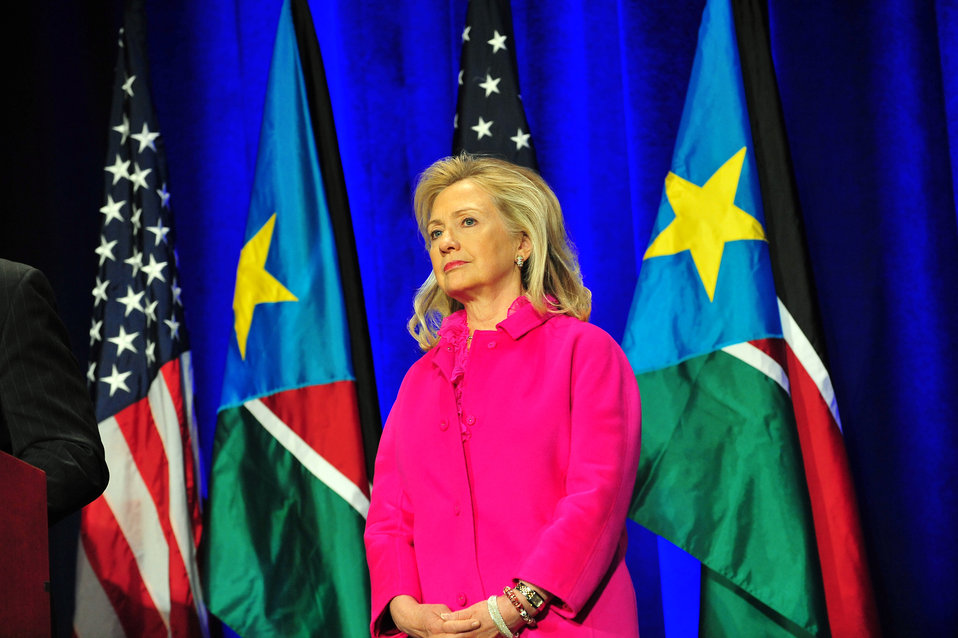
Secretary Clinton Delivers Remarks at International Engagement Conference for South Sudan

U.S. Secretary of State Hillary Rodham Clinton delivers remarks at the International Engagement Conference for South Sudan in Washington, D.C., on December 14, 2011.